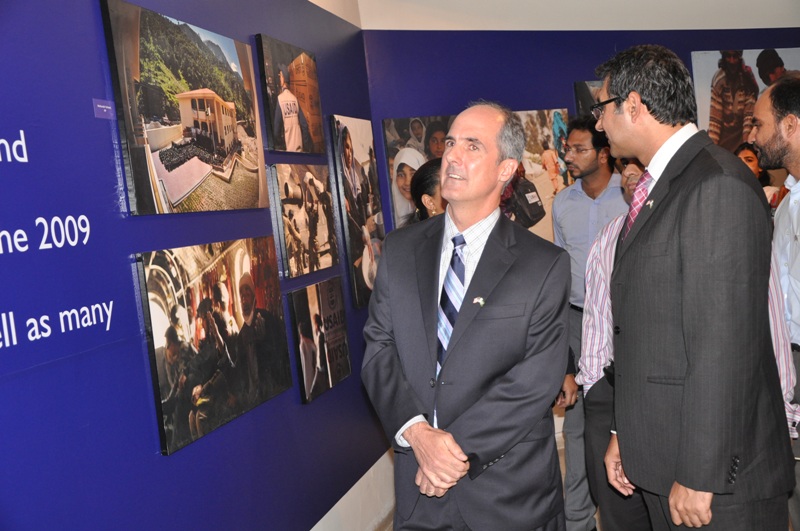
Provinicial Mission Director Punjab Ted Gehr and USAID team lookingat the photos on display